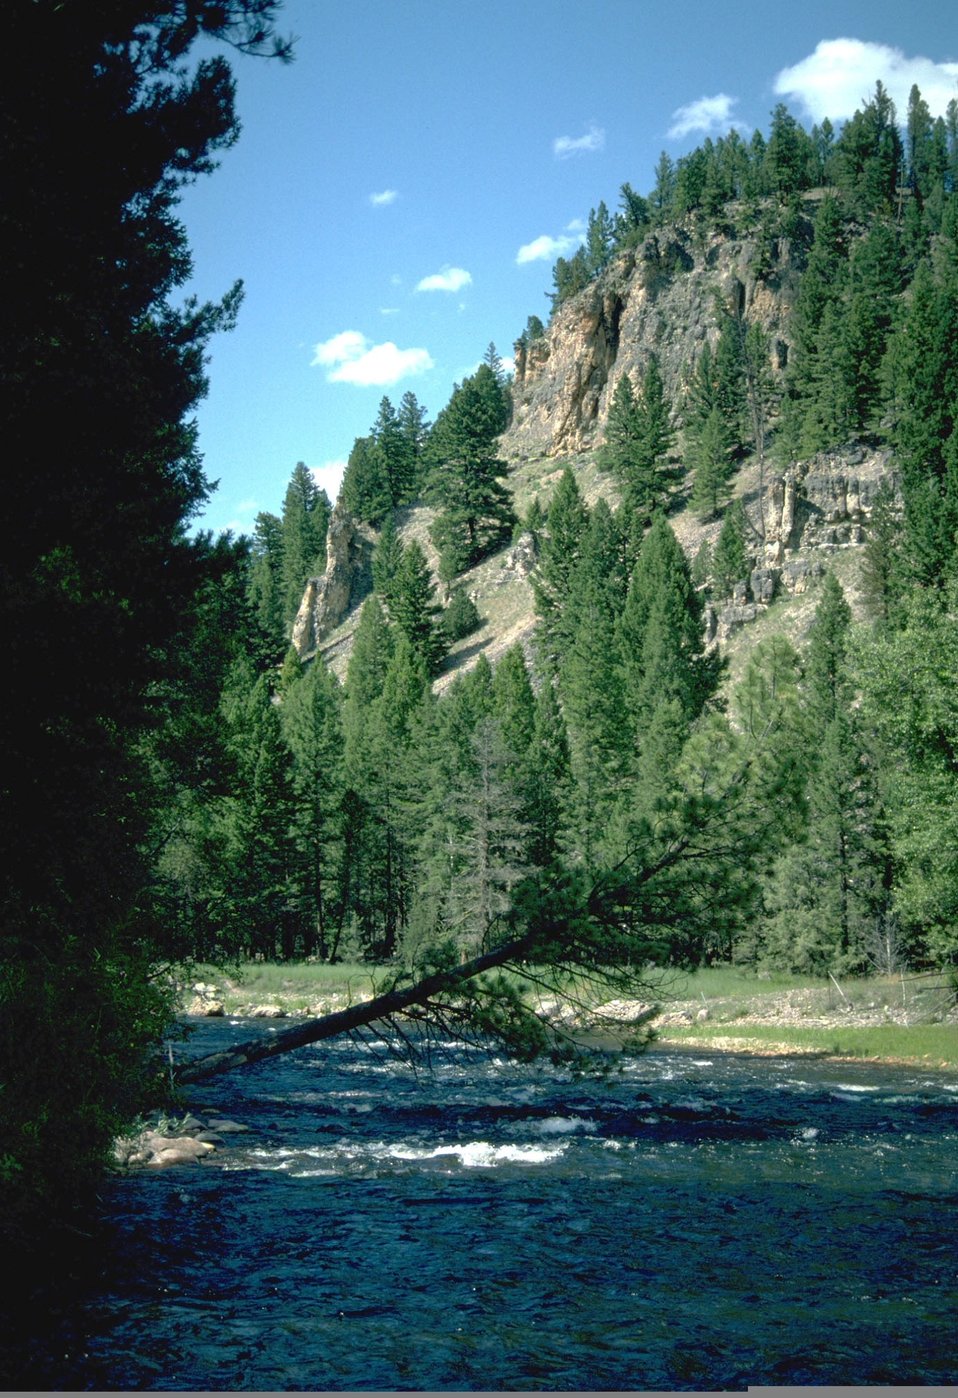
Rock Creek/ Garnet area